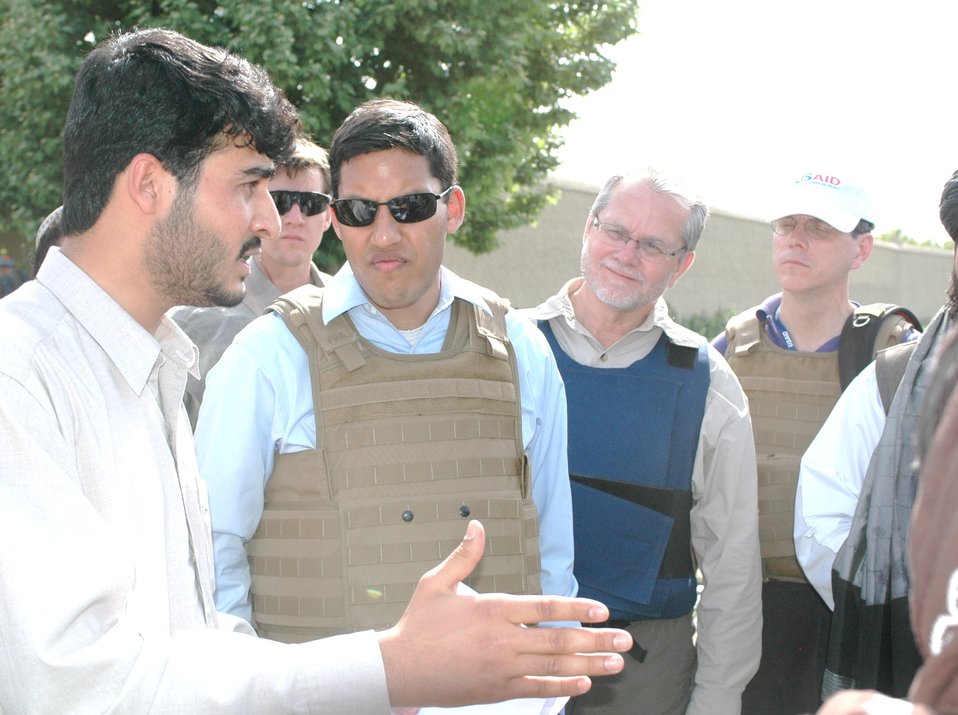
Dr Shah Visits Argandab April 10, 2010